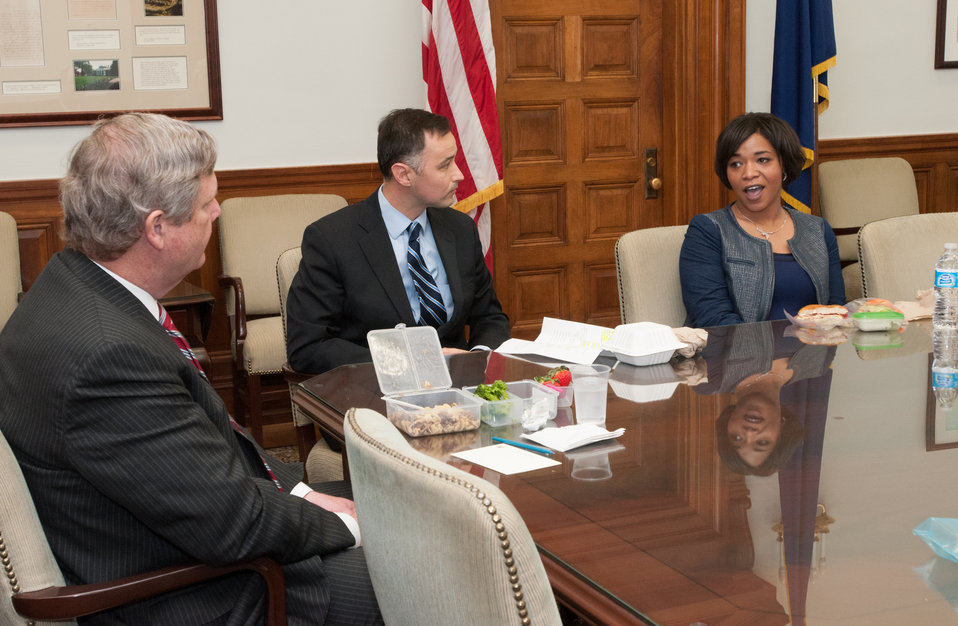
U.S. Department of Agriculture (USDA) Civil Rights Adjudicator Cinnamon Butler, right, talks about her role in the department as Agriculture Secretary Tom Vilsack, left, and Foreign Agricultural Service (FAS), Senior Advisor Patrick Kerrigan, center, listen during a Brown Bag Lunch that Secretary Vilsack periodically has with employees, in his conference room, on Tuesday, April 9, 2013, in Washington, D.C.